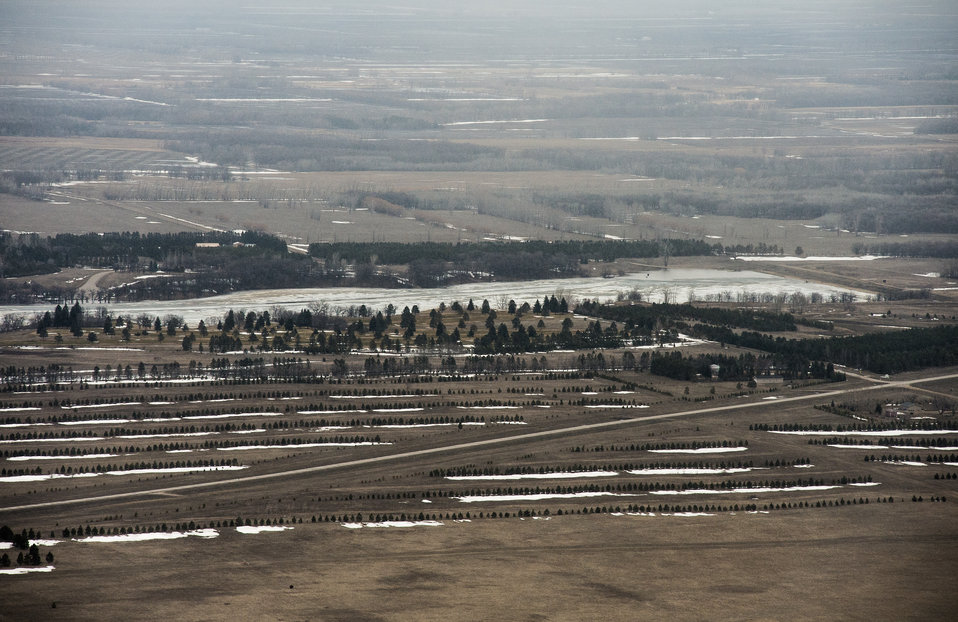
Flood pools for Renwick and Morris Dam, in Pembina County, ND, part of the Red River basin, on Wednesday, May 1, 2013. For information about this and other programs from the USDA Red River Basin Initiative (RRBI) please see www.mn.nrcs.usda.gov/news/features13/RRBI.html.